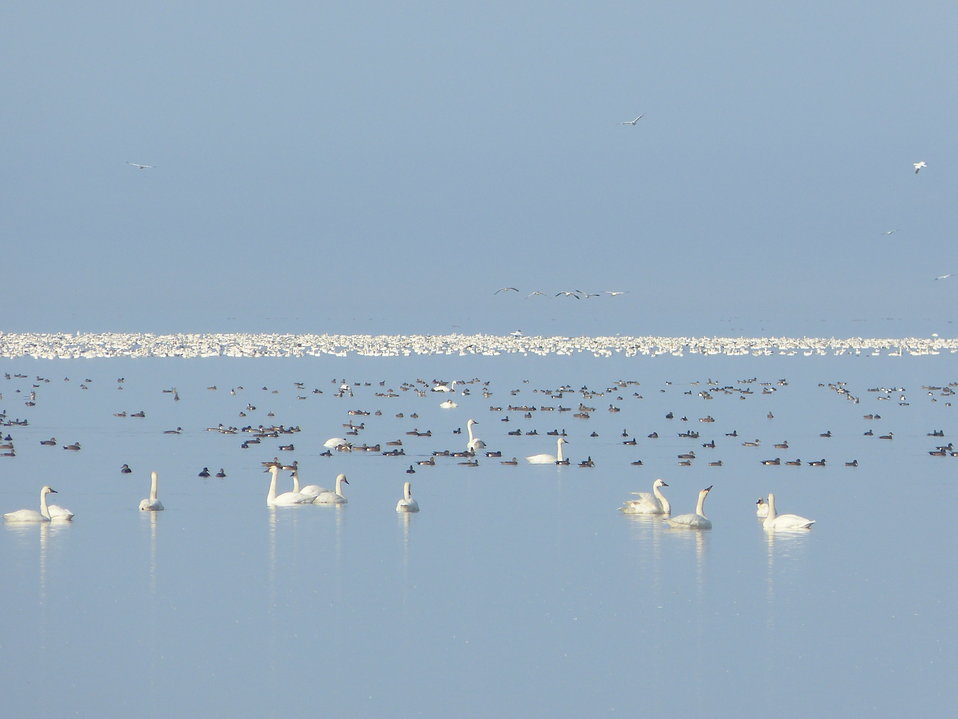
Swans on Lake Mattamuskeet

At Mattamuskeet National Wildlife Refuge in North Carolina. The Refuge’s prime location along the Atlantic Flyway makes it a vitally important stopover for wintering waterfowl.